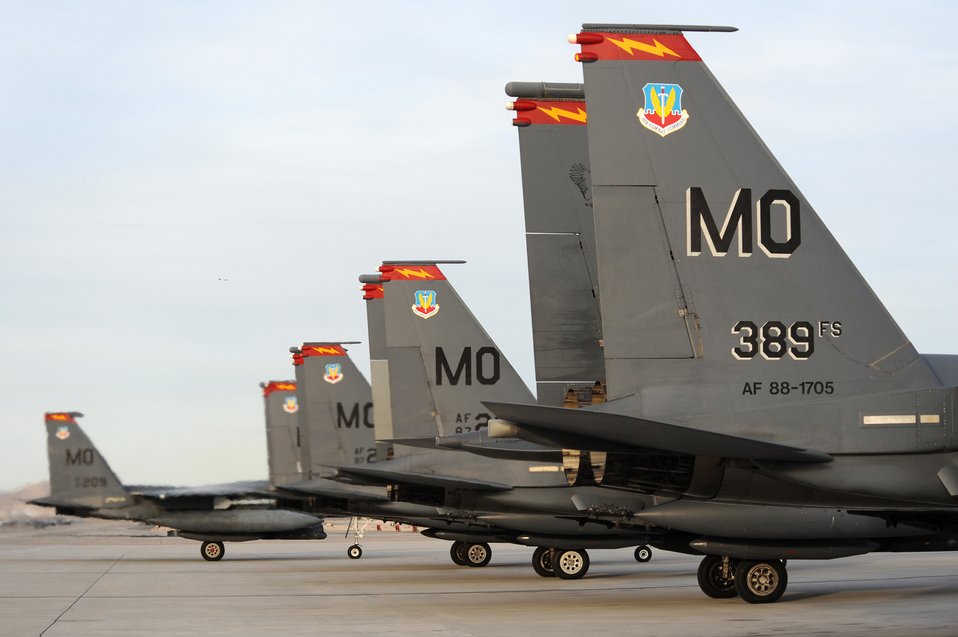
Red Flag

Air Force F-15E Strike Eagles from the 366th Fighter Wing at Mountain Home Air Force Base, Idaho, arrive at Nellis AFB, Nev., Feb 20 for Red Flag 09-3. Red Flag is a multinational exercise providing a realistic environment to practice combat scenarios.